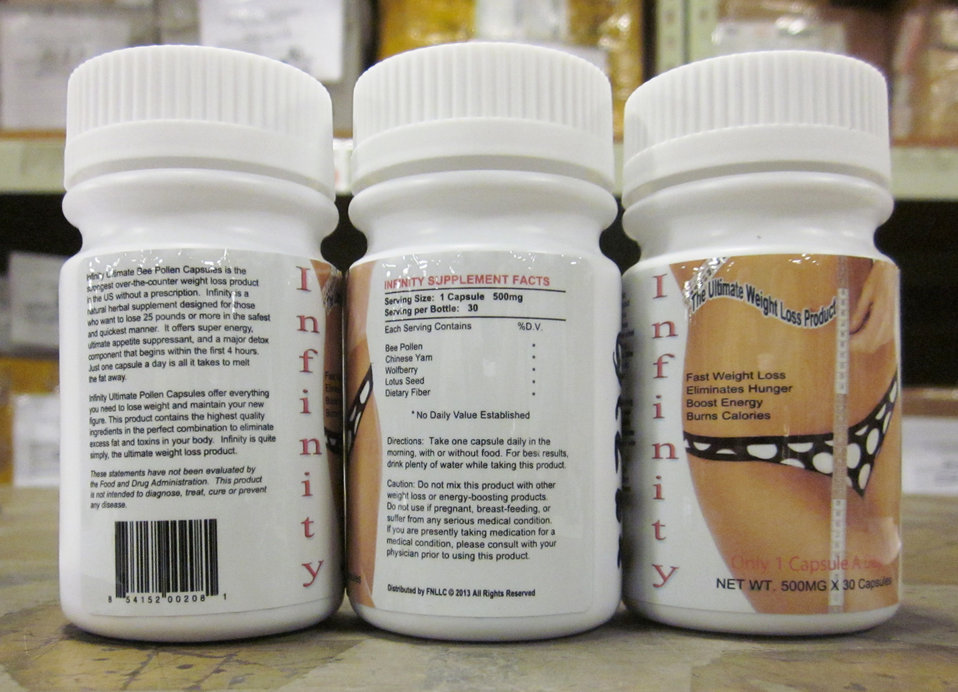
Infinity

April 10, 2014 - The FDA is advising consumers not to purchase or use Infinity, a product promoted and sold for weight loss. The product was found to contain undeclared sibutramine. For more information, go to www.fda.gov/drugs/resourcesforyou/consumers/buyingusingme...

And read this Consumer Update: Beware of Fraudulent ‘Dietary Supplements’